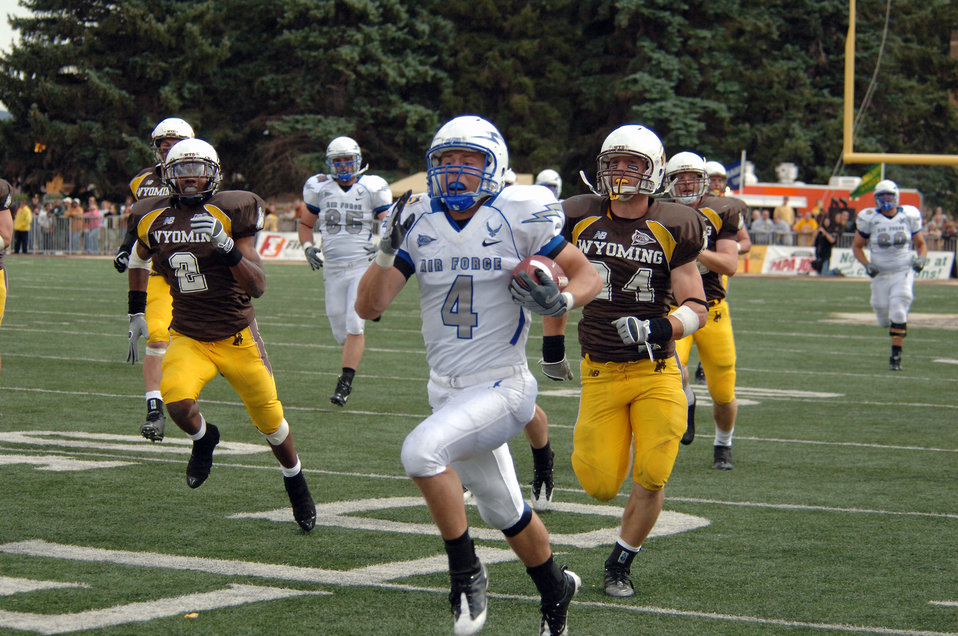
Football: Falcons defense stifles Wyoming, 23-3

U.S. Air Force Academy wide receiver Kyle Halderman races down the sideline for a 74-yard gain, which set up the Falcons' first touchdown of the game Sept. 6 in Laramie, Wyo. Halderman finished with three rushes for 85 yards in the Falcons' 23-3 win over Wyoming.